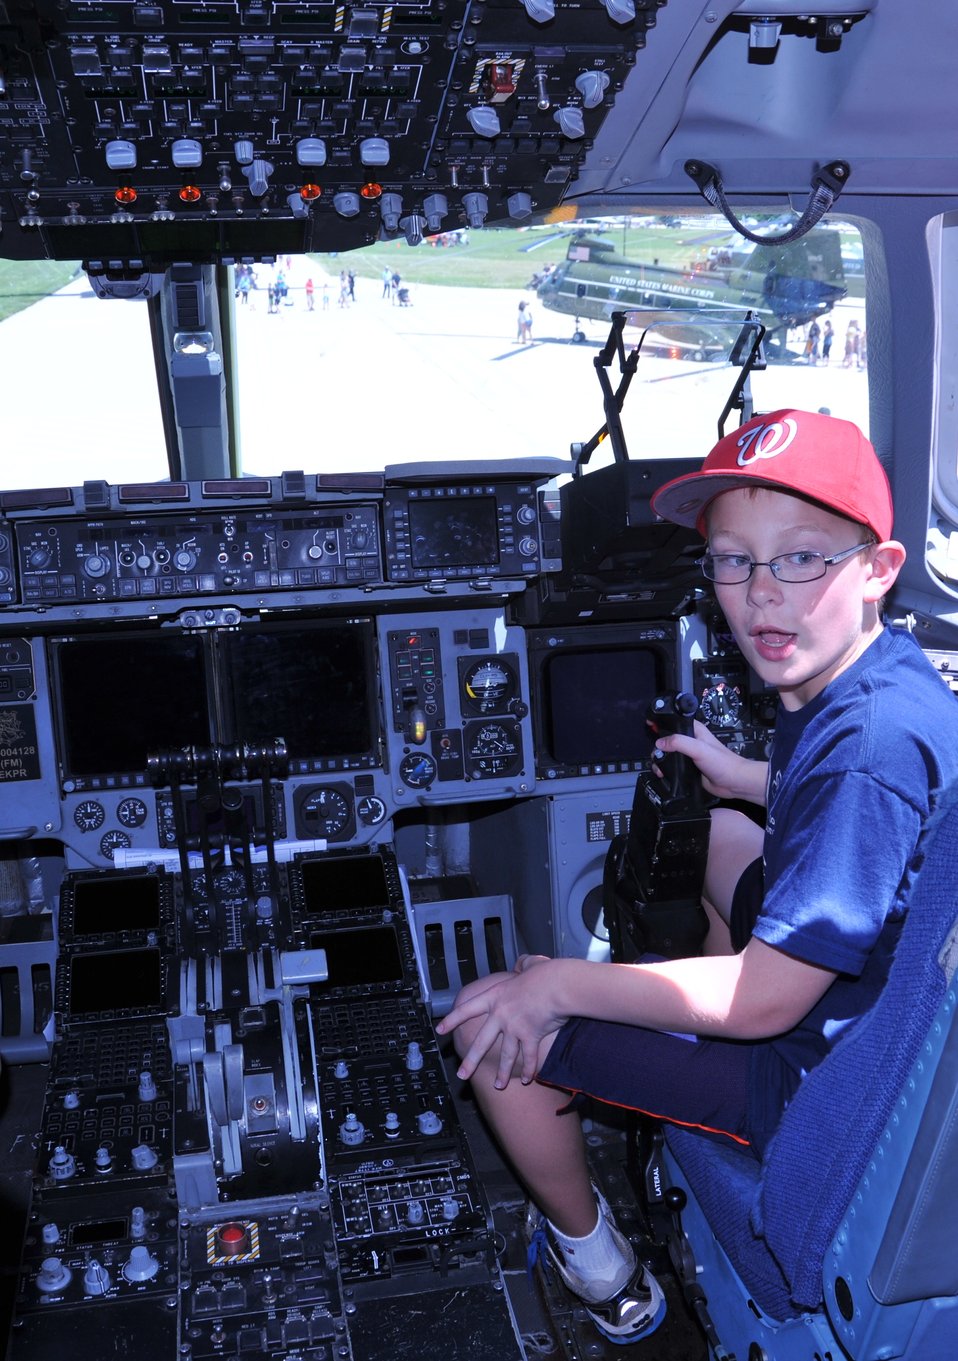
Young Pilot of a C-17

Nicholas Kendall, 10, is astonished about the controls of a C-17 Globemaster at